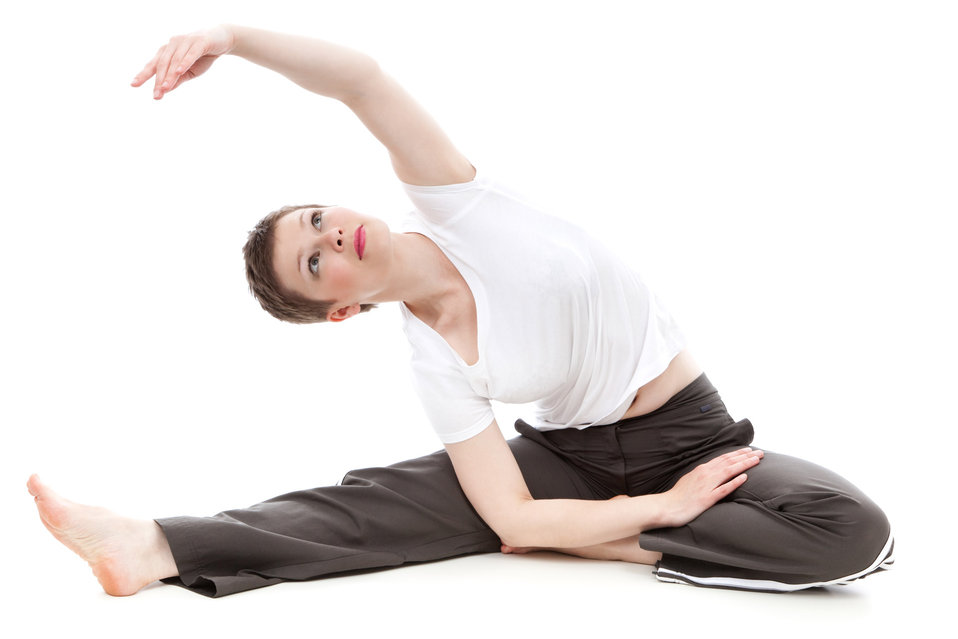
Stretching and exercising

Young woman is stretching and exercising isolated on white background - jana svojsova.